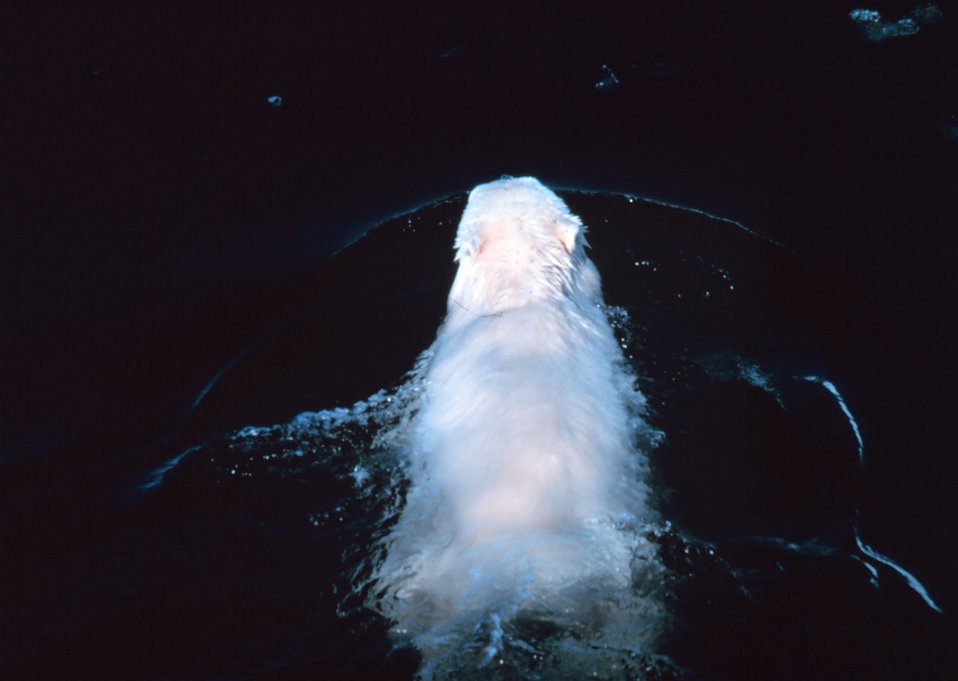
Overhead view taken from helicopter of swimming polar bear - Ursus maritimus.